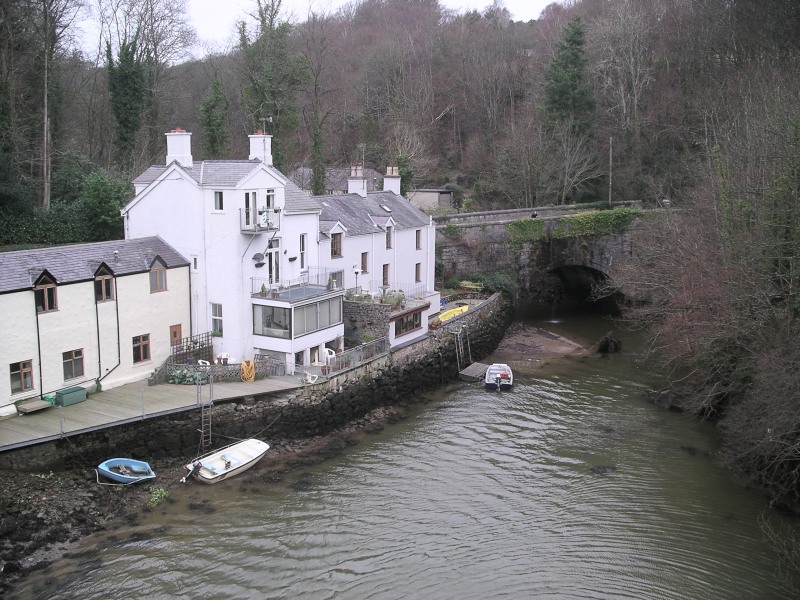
Cadnant Dingle - Menai Bridge, the traditional landing stage for the Bishop of Bangor prior to the construction of Thomas Telford's suspension bridge across the Menai Strait